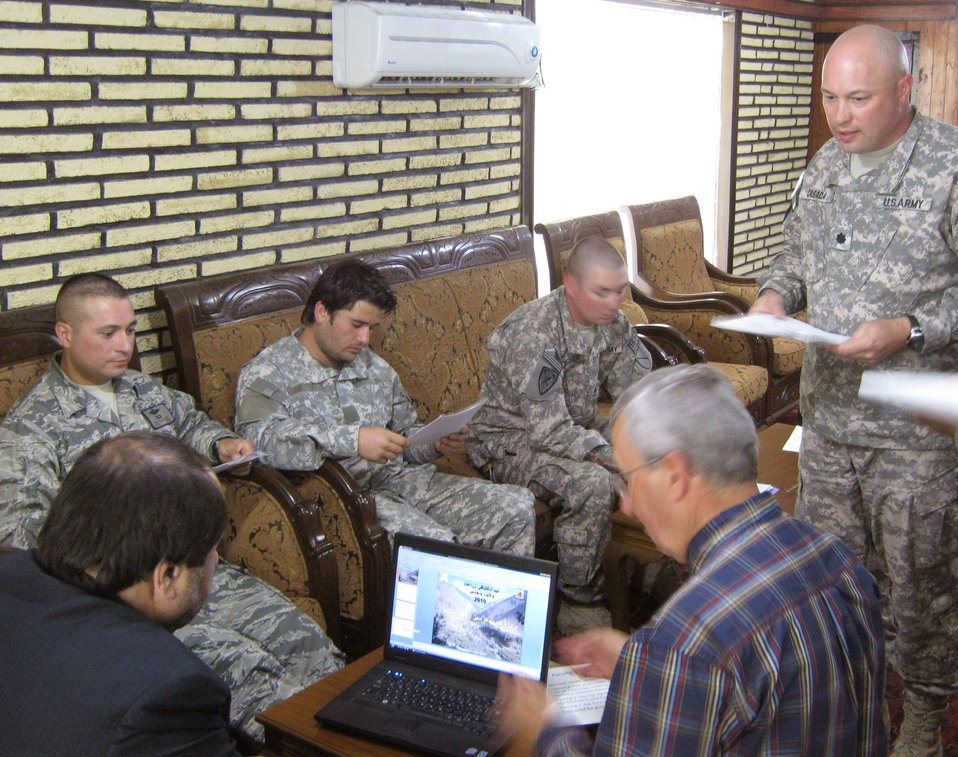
PRT project could bring 35,000 new trees to Panjshir province

Panjshir Gov. Keramuddin Keram (left) listens to a presentation about the Panjshir Valley Green Belts Project from Army Lt. Col. Jeffrey Casada (right) while Jim Hoffman, runs the computer slide show. Colonel Casada is the Kentucky National Guard Agri-Business Development Team leader and Mr. Hoffman is a U.S. Department of Agriculture advisor.